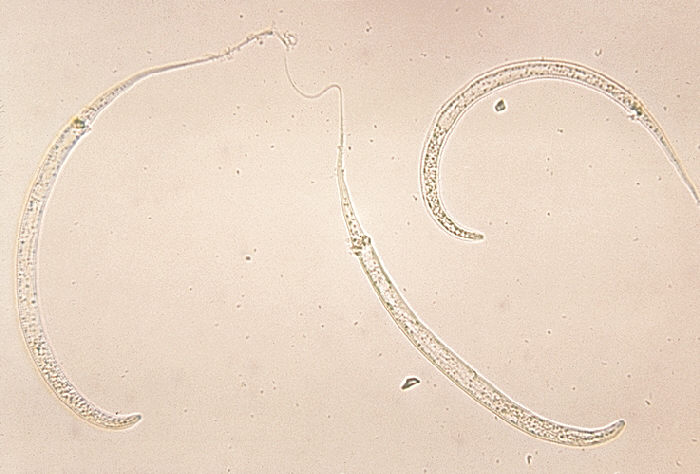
Dracunculus medinensis larvae. Parasite.